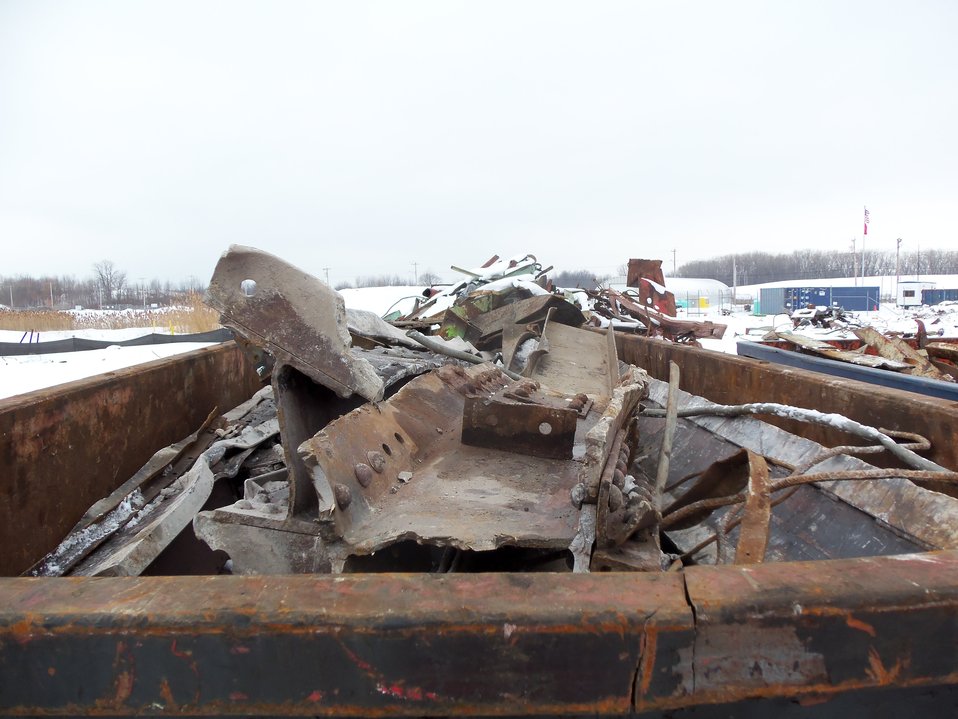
DEBRIS PILE LOADING TO TRANSPORT BOXES

Activities from the Niagara Falls Storage Site, which is associated with the former Lake Ontario Ordnance Works. Formerly Utilized Sites Remedial Action Program (FUSRAP), a program initiated in 1974 to identify, investigate and clean up or control sites that were part of the Nation's early atomic energy and weapons program. Activities at the sites that are eligible for FUSRAP were conducted by Manhattan Engineer District (MED) or the Atomic Energy Commission (AEC), both predecessors of the Department of Energy (DOE). The U.S. Army Corps of Engineers was assigned management of FUSRAP by Congress in 1997.